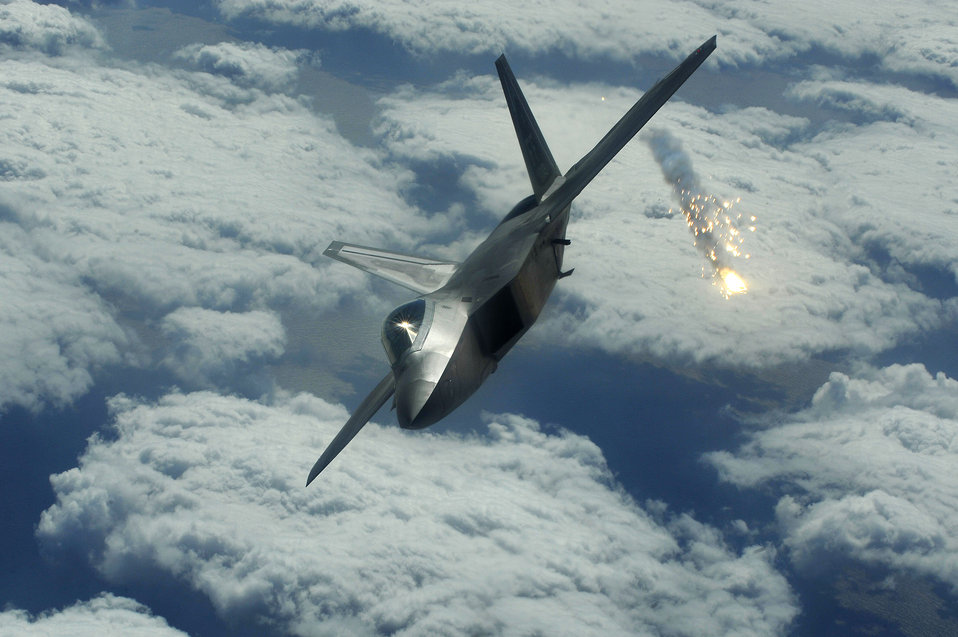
F-22s begin training in Japan

An F-22 Raptor shoots out a flare during an air combat training mission Jan. 15. The F-22 is deployed to Kadena Air Base, Japan, from the 27th Fighter Squadron at Langley Air Force Base, Va., in support of U.S. Pacific Command.